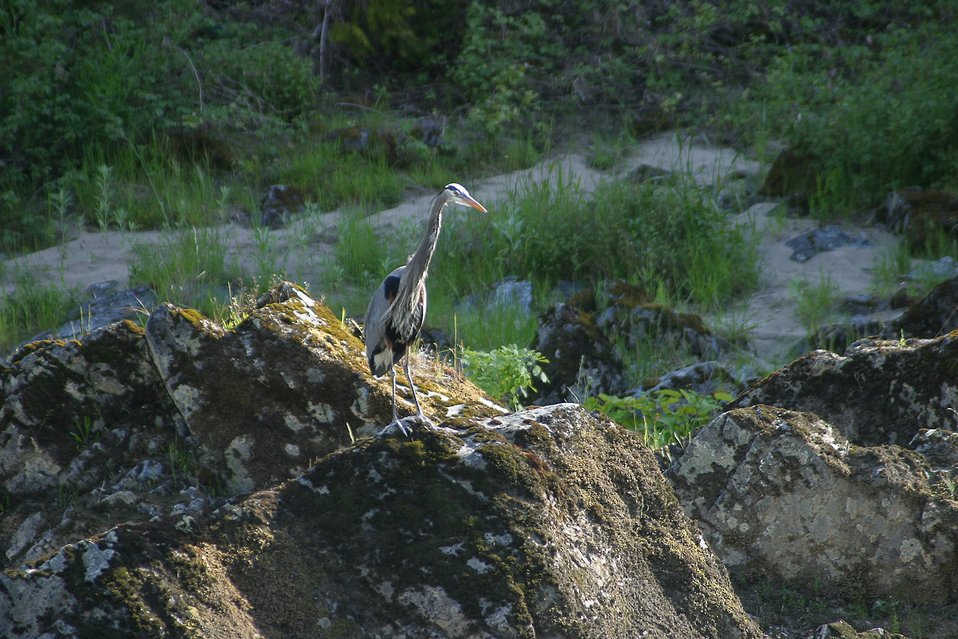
Great Blue Heron on the Wild section of the Rogue River from Grave Creek to Foster Bar. 3100 cfs at Grants Pass and 5300 at Agness.